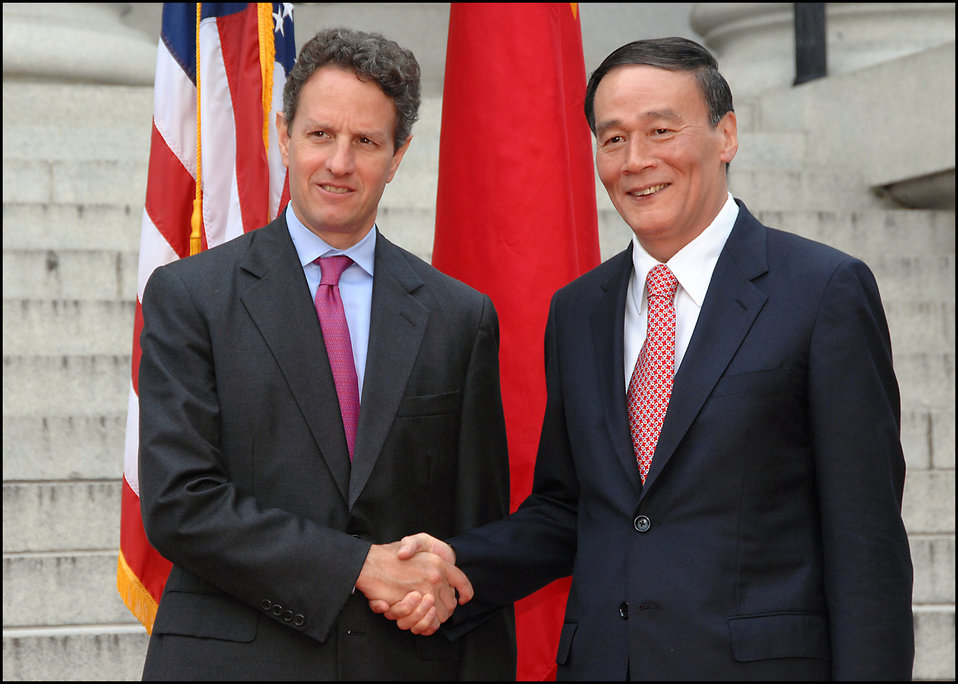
SandED: July 27-28, 2009

Secretary Geithner and Vice Premier Wang at the first U.S.-China Strategic and Economic Dialogue held in Washington, D.C. on July 27 and 28.